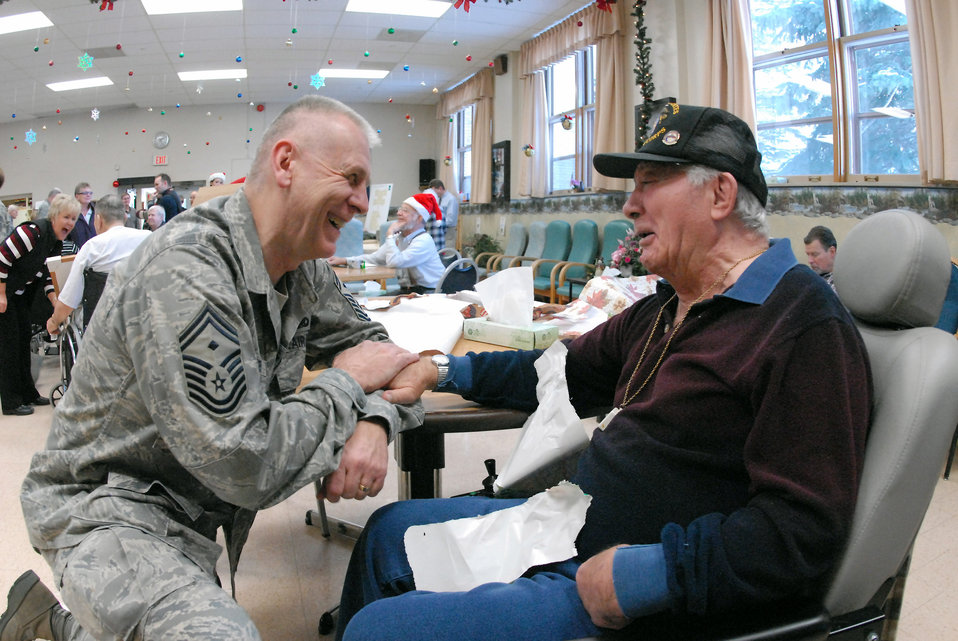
Airmen deliver Christmas

Senior Master Sgt. Paul Tangen visits with Marine veteran Marvin Schiermeister at the North Dakota Veteran's Nursing Home Dec. 10 in Lisbon, N.D. The gifts are given to veterans at the nursing home by the North Dakota Air and Army National Guard each December using funds raised through personal donations given by the North Dakota National Guard members. Sergeant Tangen is the the 119th Wing first sergeant.